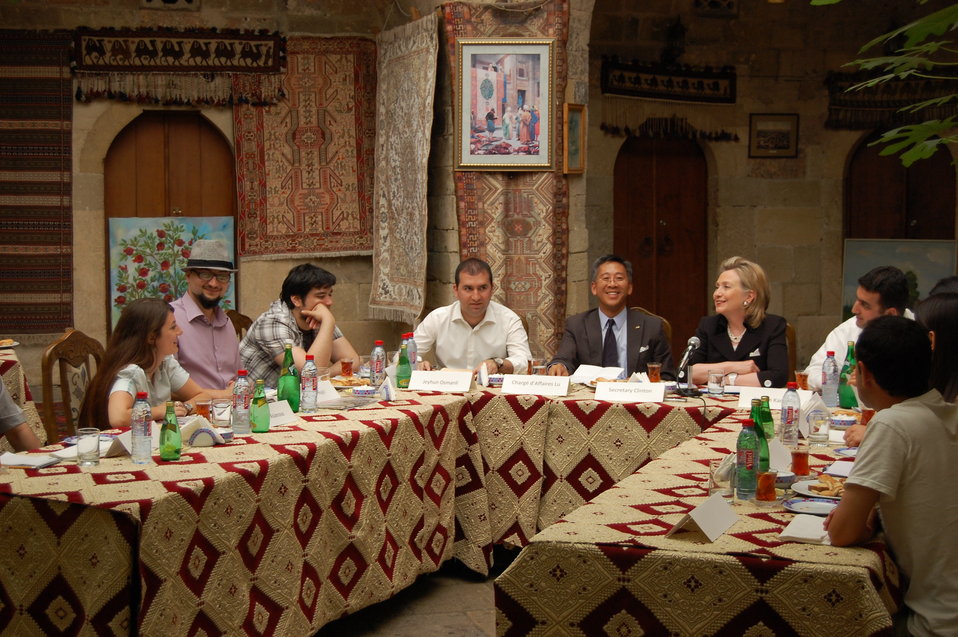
Secretary Clinton Spends Time With Azerbaijanis

U.S. Secretary of State Hillary Rodham Clinton enjoys a meal with (left to right) Ali Novruzov, Leyla Aslanova, Ramin Hajili, Vugar Safarov, Jeyhun Osmanli, Charge Don Lu, S, Jeyun Karamov, Gulsel Safarova, Rashad Shirin, Roya Talibova, and Zaur Akbar at the Mugham Club in Baku, Azerbaijan, on July 4, 2010.